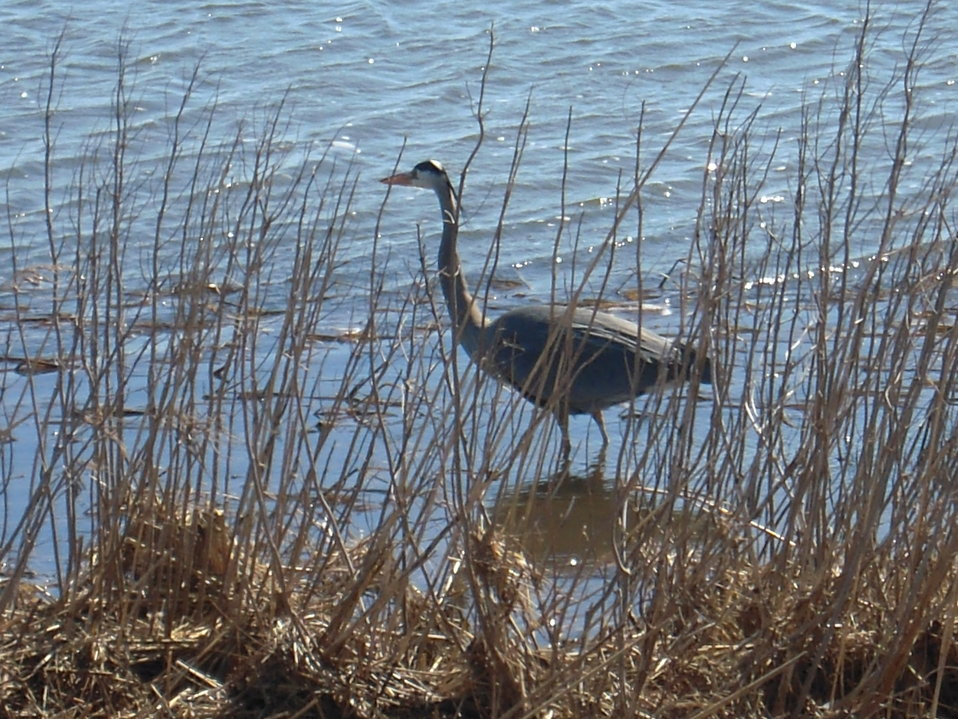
Great blue heron at E.B. Forsythe NWR.